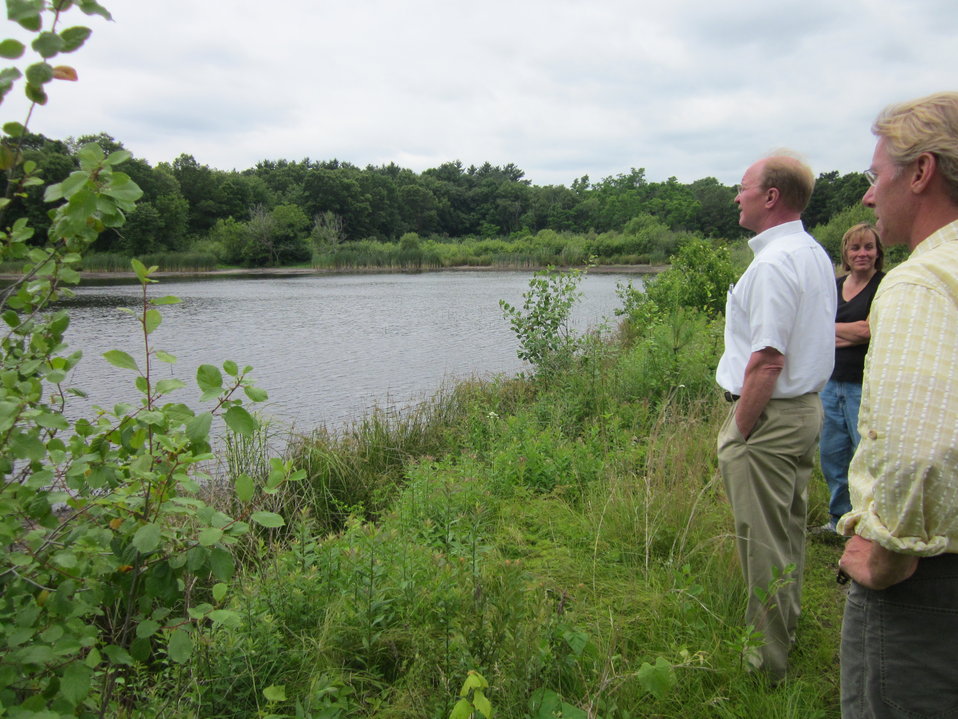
Looking to the future?

North Attleboro, MA, June 2012: Project Leader Joe McKeon of the Central New England Fisheries Office (left), Northeast Region Deputy Director Deborah Rocque, and Northeast Region Senior Fisheries Biologist David Perkins tour ponds at the 235-acre North Attleboro National Fish Hatchery. Though not currently used , several ponds have potential for fish production.